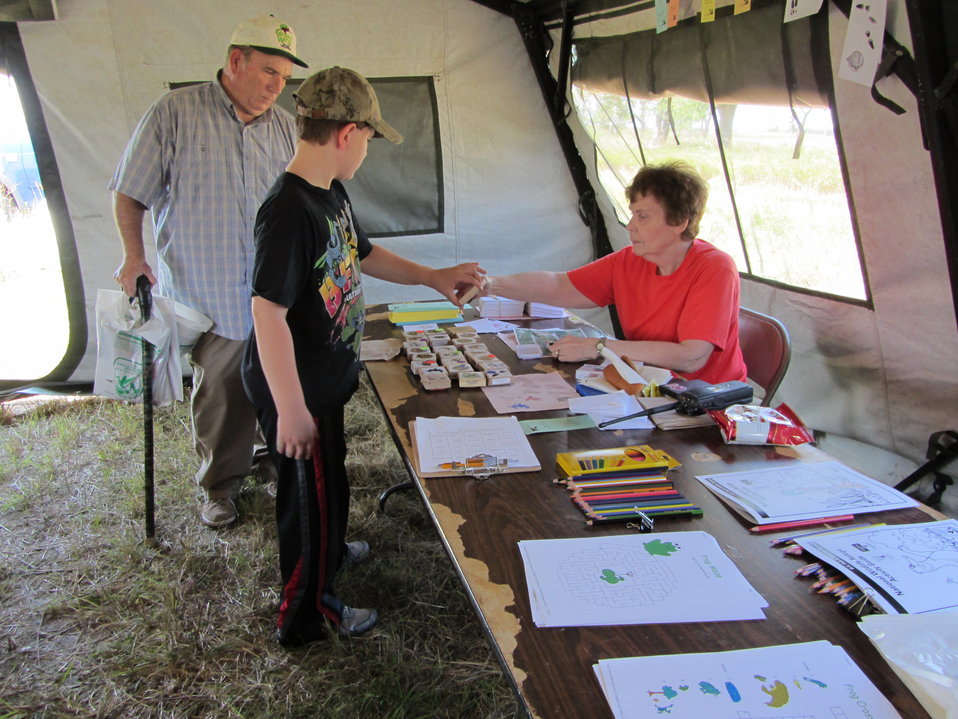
2011 Huron Prairie Fest